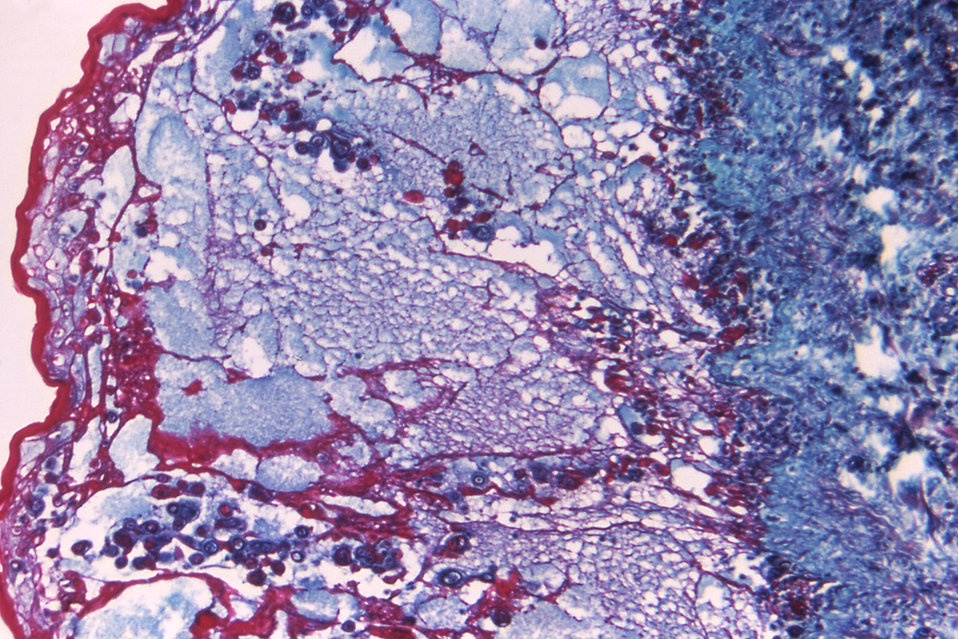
Under a magnification of 125X, this photomicrograph reveals some of the cytoarchitectural histopathologic changes which you'd find in a human skin tissue specimen that included a chickenpox, or varicella zoster virus lesion.